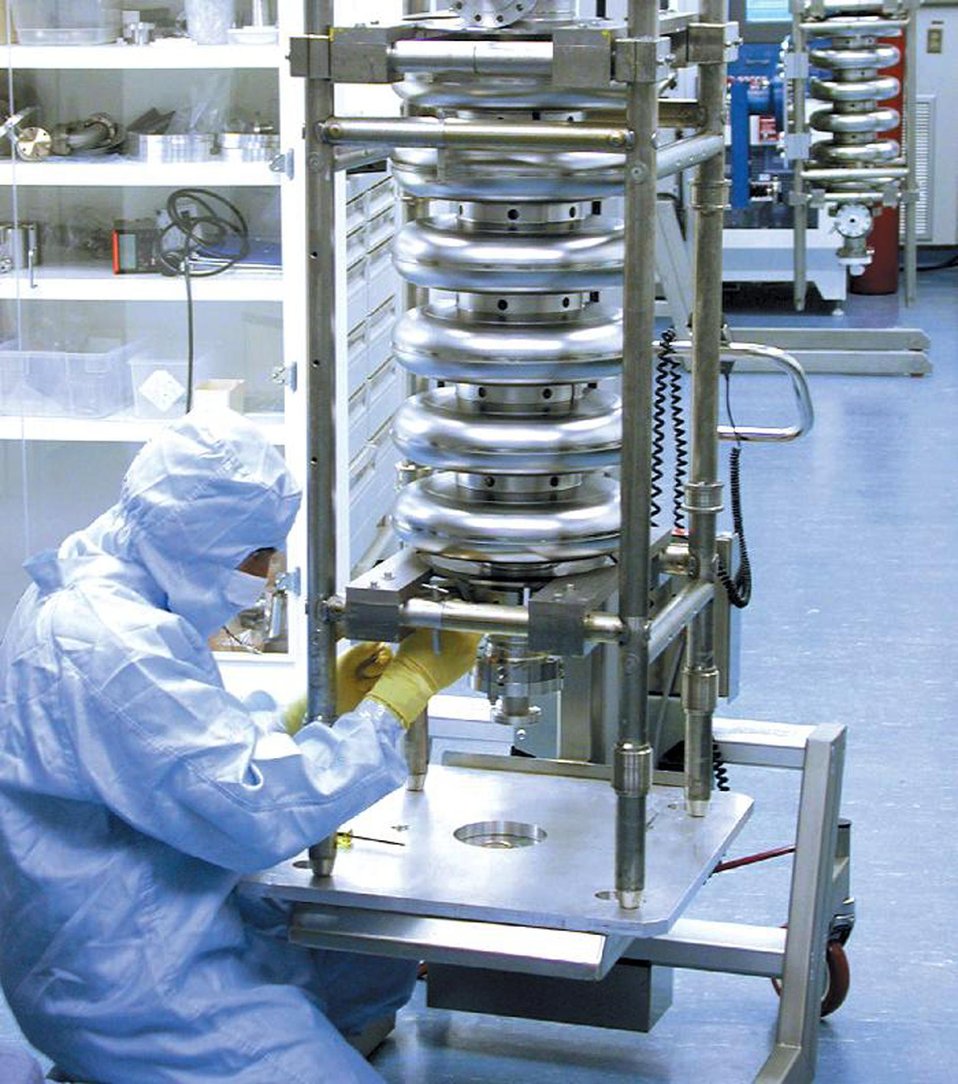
SPALLATION NEUTRON SOURCE CAVITY ASSEMBLY IN A CLEAN ROOM OF THE TEST LAB AT THE THOMAS JEFFERSON NATIONAL ACCELERATOR FACILITY.

JEFFERSON LAB SCIENTISTS, ENGINEERS AND TECHNICIANS ARE PARTICIPATING IN THE PRODUCTION OF THE COMPLEX STATE-OF-THE-ART SUPER-COOLED COMPONENTS IN WHICH PARTICLE BEAMS ARE ACCELERATED FOR SCIENTIFIC RESEARCH. EVENTUALLY 81 NIOBIUM CAVITIES FOR 23 CRYOMODULES WILL BE PROVIDED FOR A NEW FEDERAL LABORATORY, THE SPALLATION NEURTRON SOURCE UNDER CONSTRUCTION AT OAK RIDGE, TENNESSEE.